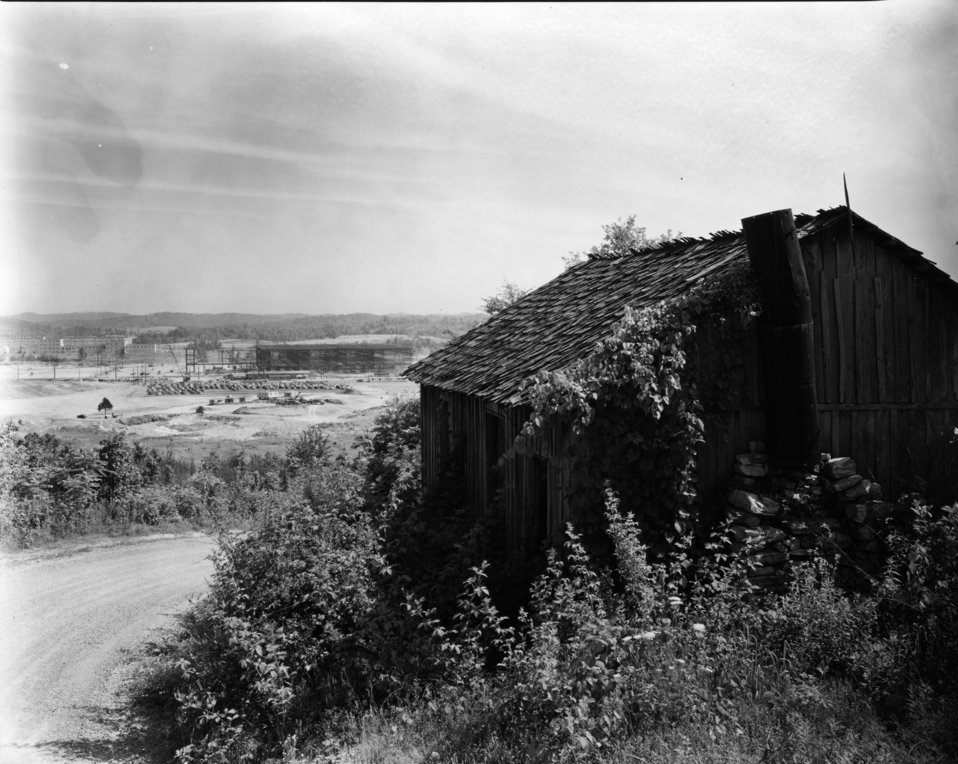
Construction activity at Oak Ridge